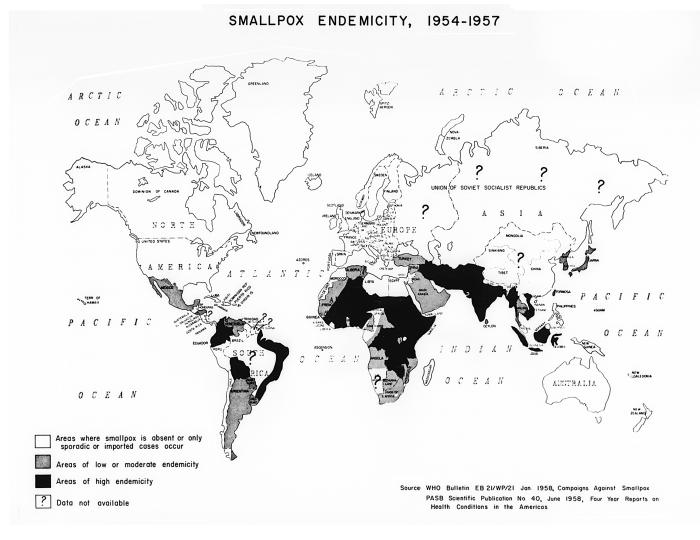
This map depicted the endemic distribution of the smallpox virus between the years of 1954 - 1957. The sources for this map were the World Health Organization (WHO) Bulletin, EB 21/WP/21, January 1958, Campaigns Against Smallpox, and the Pan American Sanitary Bureau (PASB), Scientific Publication, No. 40, June, 1958, Four Year Reports on Health Conditions in the Americas.